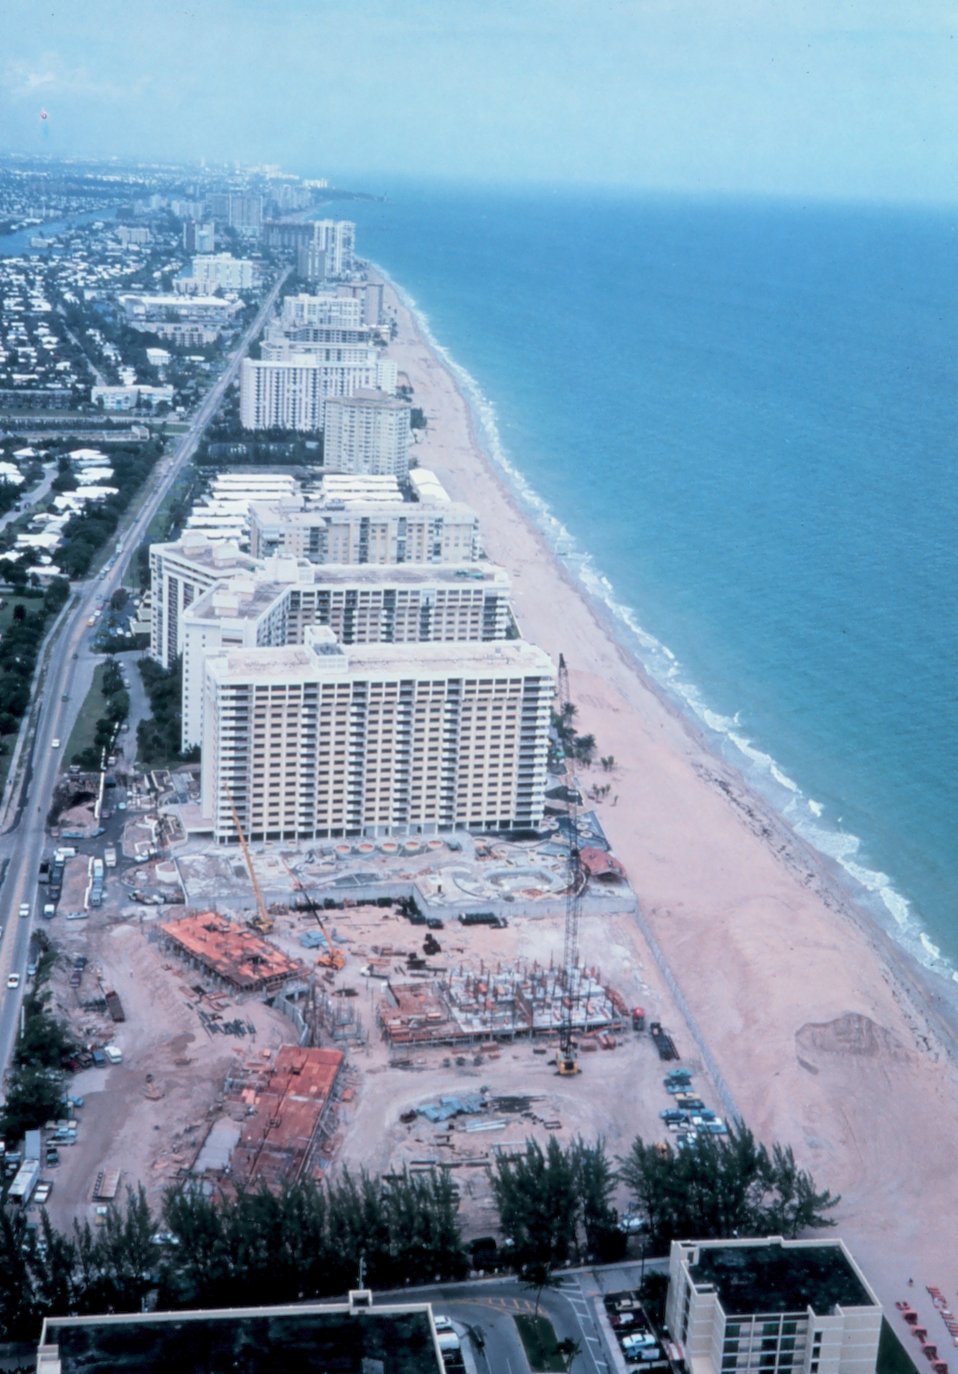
The view to the north at Pompano Beach